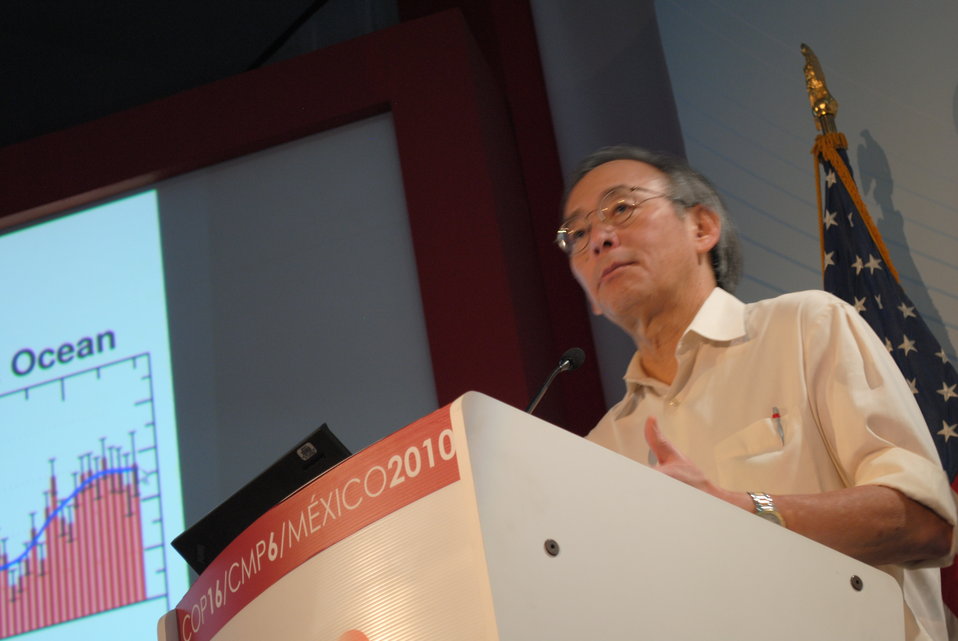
Secretary Chu Addresses the U.S. Center

U.S. Secretary of Energy Steven Chu addresses the U.S. Center at COP-16 in Cancun, Mexico, on December 6, 2010.